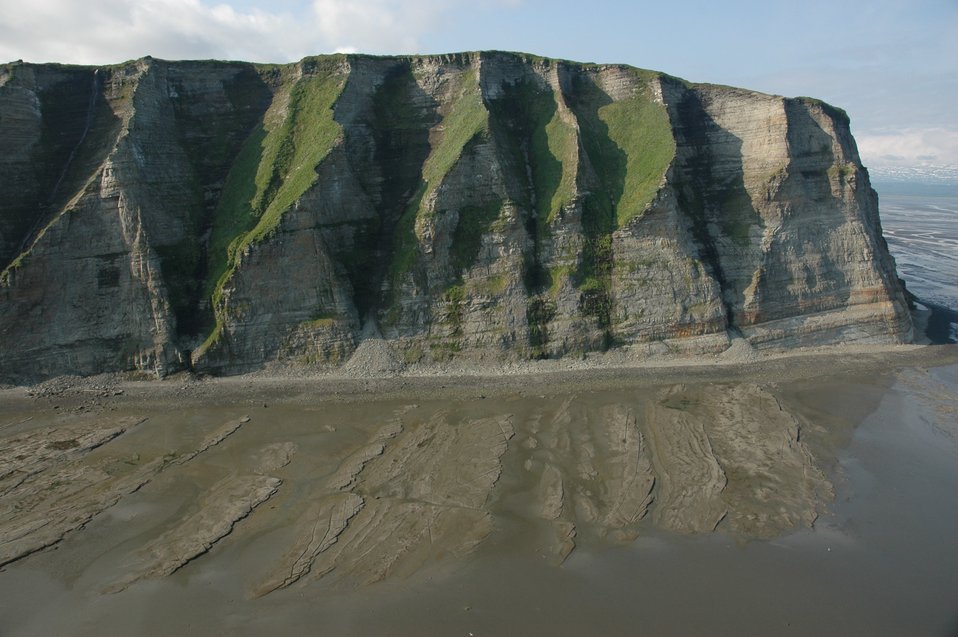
Aerial photograph.McNeil Head